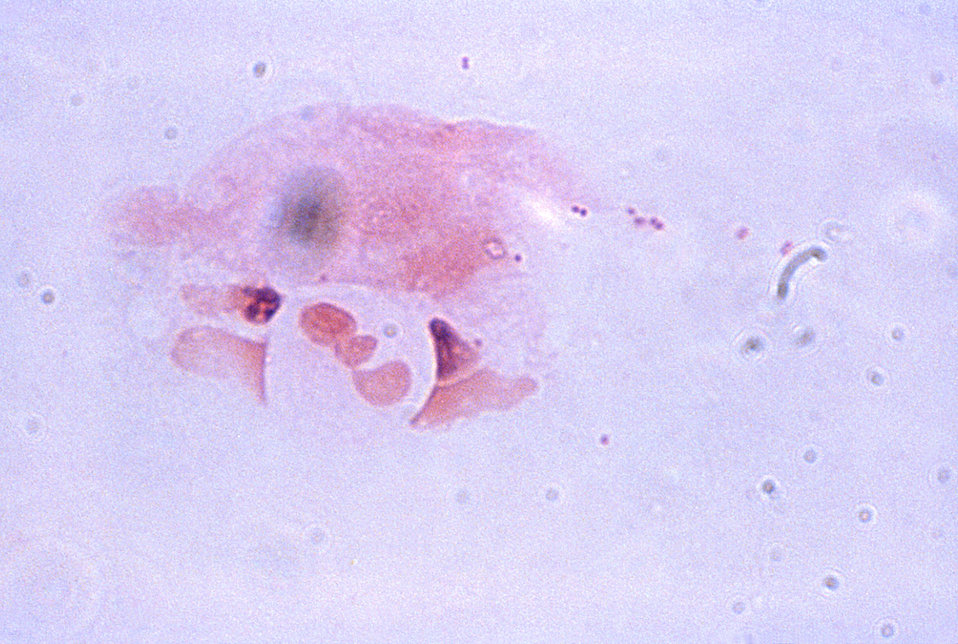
This micrograph revealed the presence of a number of extracellular N. gonorrhoeae diplococci, and white blood cells.